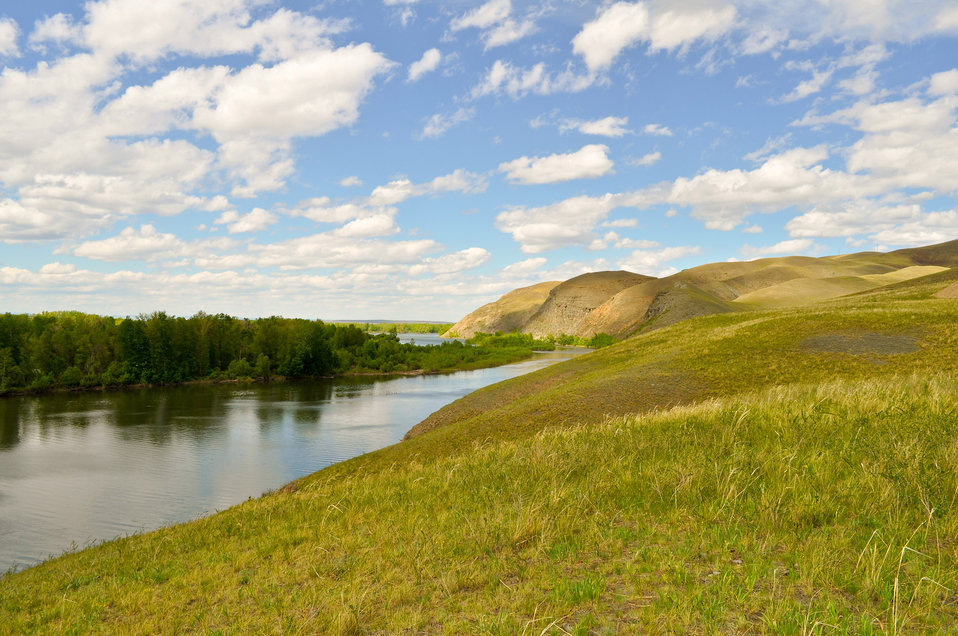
The mountains, river and sky

Summer landscape with the mountains above the river.